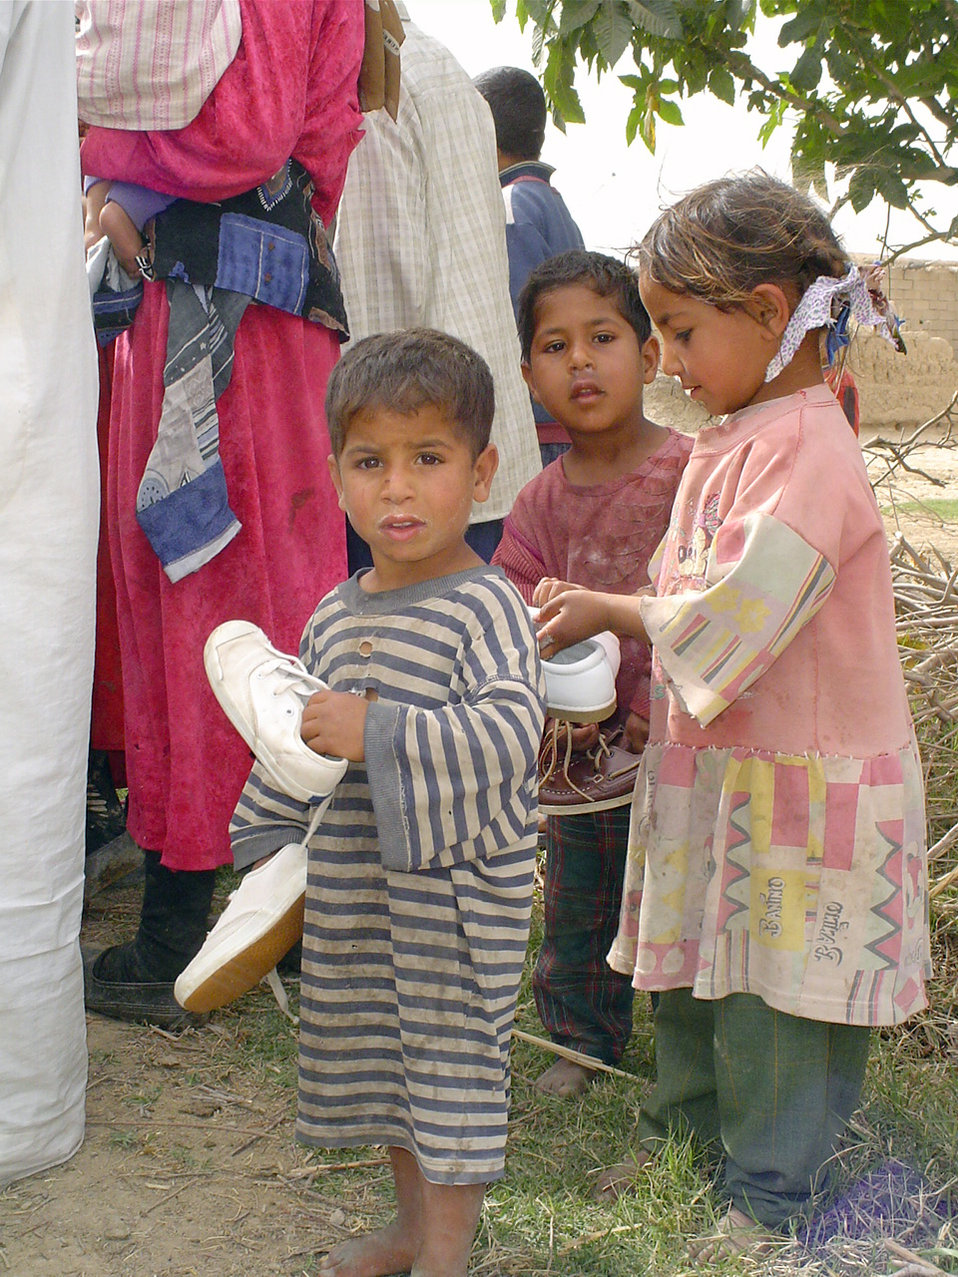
Iraq, Operation Iraqi Freedom, humanitarian

VEDGHA, Iraq - Iraqi children are not quite sure what to do with the shoes they were given during a recent humanitarian relief mission here. Airmen of the 447th Air Expeditionary Group at Baghdad International Airport were here handing out donated goods donated from their home bases.